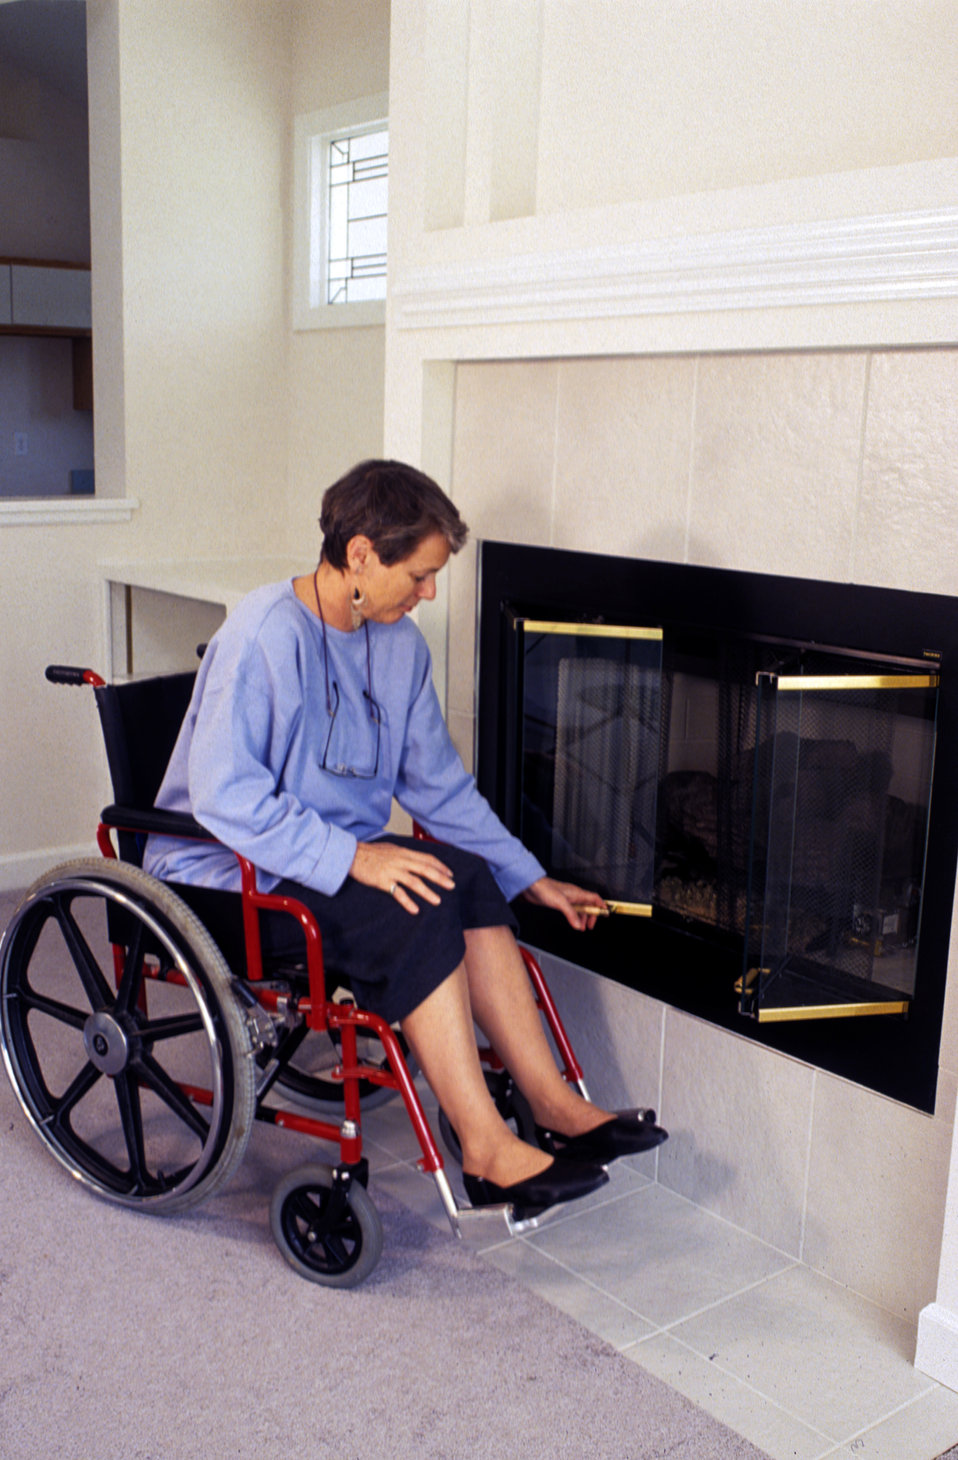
This 1994 image depicted a woman who was seated in a wheelchair in front of a raised hearth-type fireplace as she was opening the fireplace doors. Raising the hearth above ground level minimized the need for bending over and stooping, thereby, facilitating use by those with balance limitations, back problems, a short stature, or seated in mobility devices such as the woman pictured here.The Center for Universal Design (CUD) is a national research, information, and technical assistance center that evaluates, develops, and promotes accessible and universal design in housing, buildings, outdoor and urban environments and related products. The Center's work manifests the belief that all new environments and products, to the greatest extent possible, should be usable by everyone regardless of their age, ability, or circumstance.